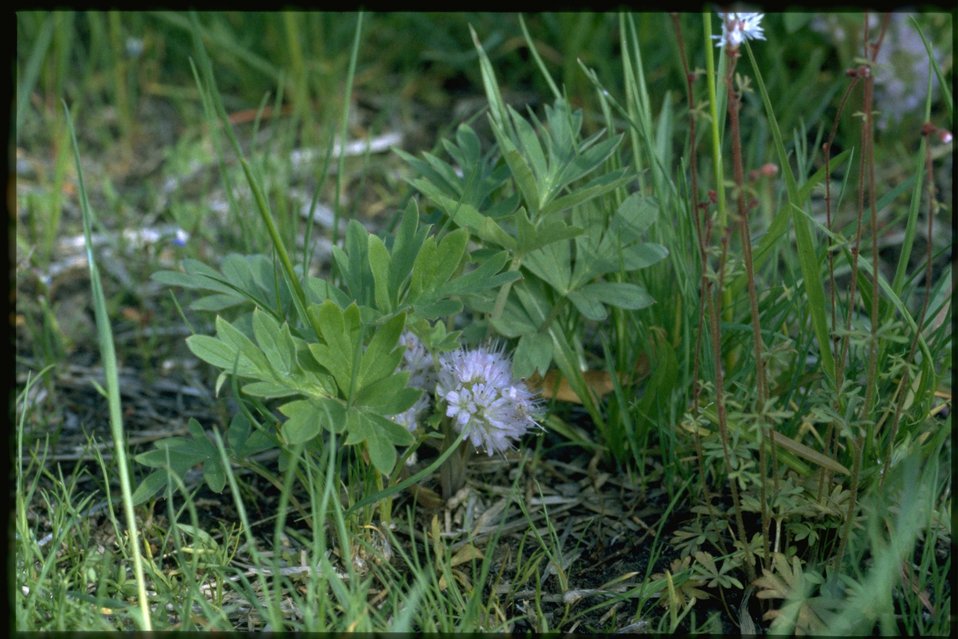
Farshot of Dwarf Waterleaf, Hyderophyllum Capitatum, wildflower.